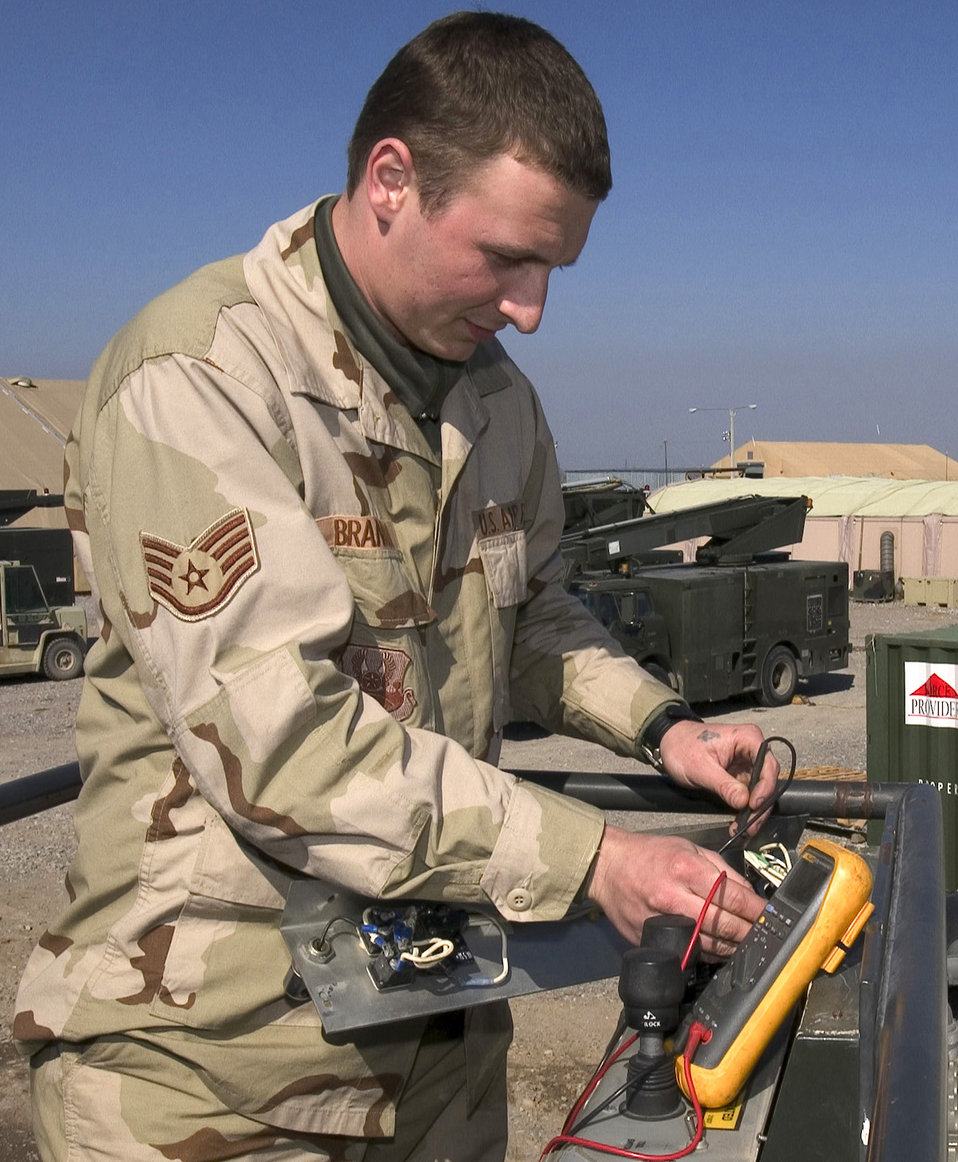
Saving the Condor

MANAS AIR BASE, Kyrgyzstan -- Staff Sgt. Matthew Brannon performs an electrical continuative check on the Condor de-icing vehicle here. He is a special-purpose vehicle mechanic with the 376th Expeditionary Logistics Readiness Squadron and is deployed from Nellis Air Force Base, Nev.